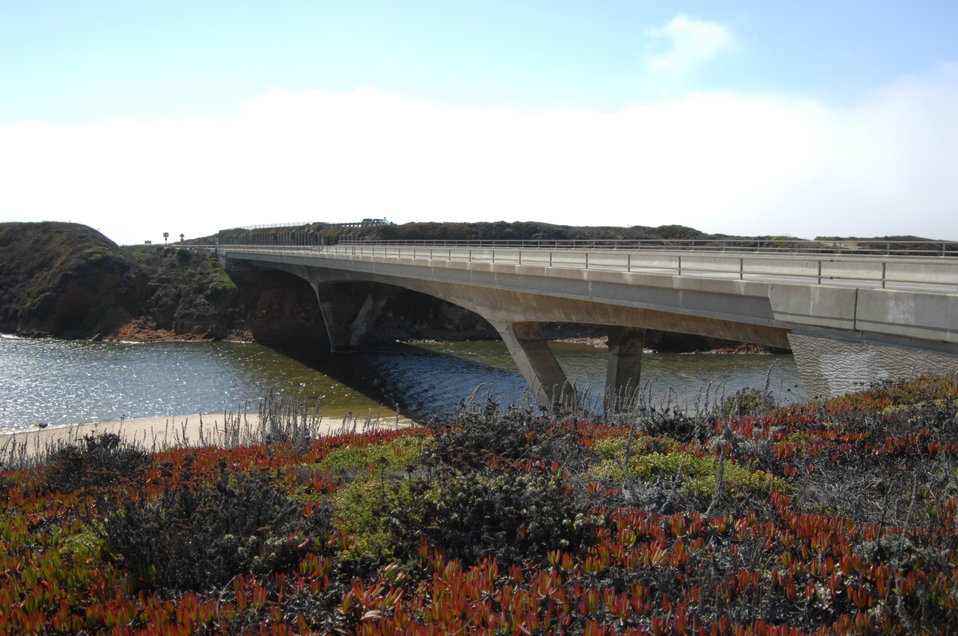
Pescadero Lagoon 2

Fish die when there is a lack of oxygen. During a typical year, after the sandbar forms, water quality in the lagoon degrades (e.g., very low or depleted levels of oxygen in the bottom portion of the water column).

During a typical fall breach event, the large volume of oxygen-poor or oxygen-depleted bottom water in the lagoon is quickly mixed into the remainder of the water column which can deplete oxygen concentrations, affect pH, and release concentrations of toxic hydrogen sulfide. Re-suspended sediment on the bottom of the lagoon also uses up oxygen. It is believed that during the typical fall breach, there may not be enough dissolved oxygen in the water column for fish to breathe.